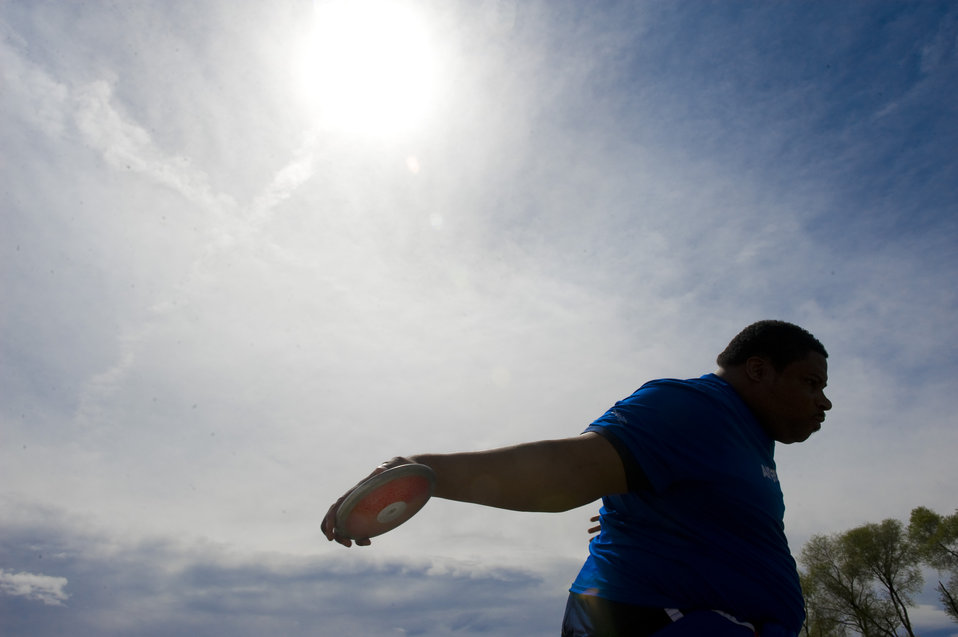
2011 Warrior Games

Air Force athlete Timothy Anderson throws a discus during the track and field competition May 17, 2011, at the 2011 Warrior Games in Colorado Springs, Colo. The track and field events kicked off the games, which continue throughout the week.